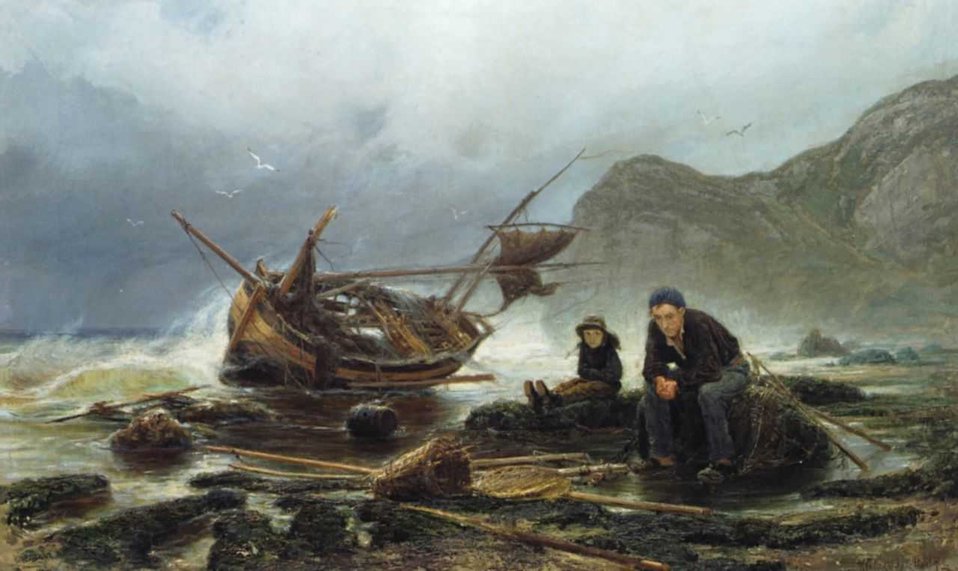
A tenger Normandiában